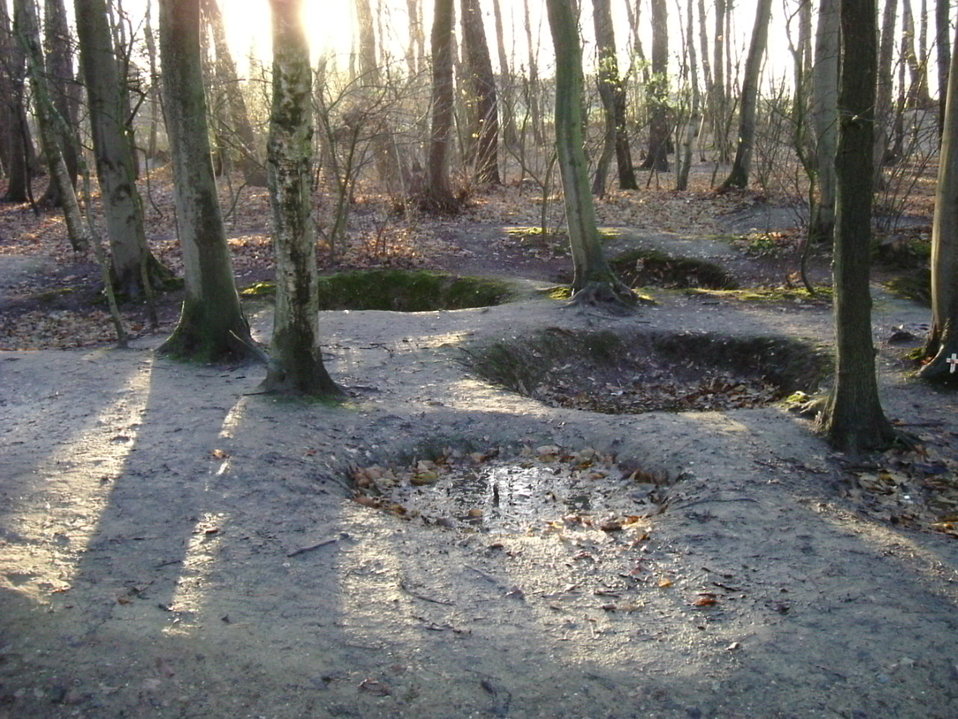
Bombcraters of the Great War